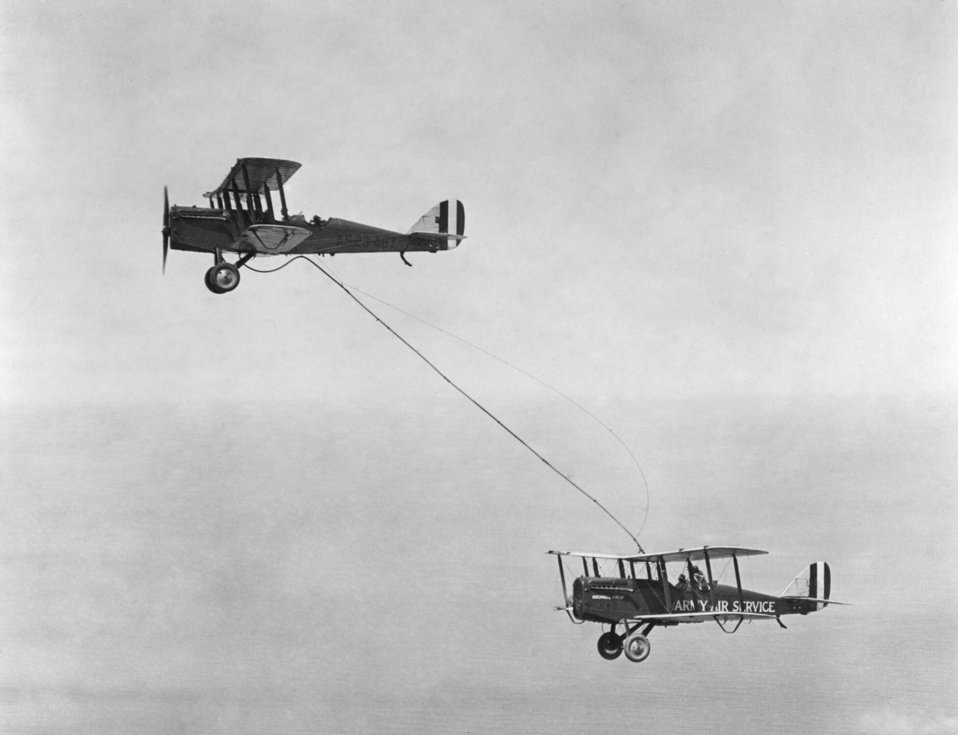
Early mid-air refueling

EARLY YEARS -- Refueling in mid-air by Capt. Lowell H. Smith and Lt. John P. Richter, at Rockwell Field, Calif., June 1923. They stayed in the air four days using DeHaviland airplanes.